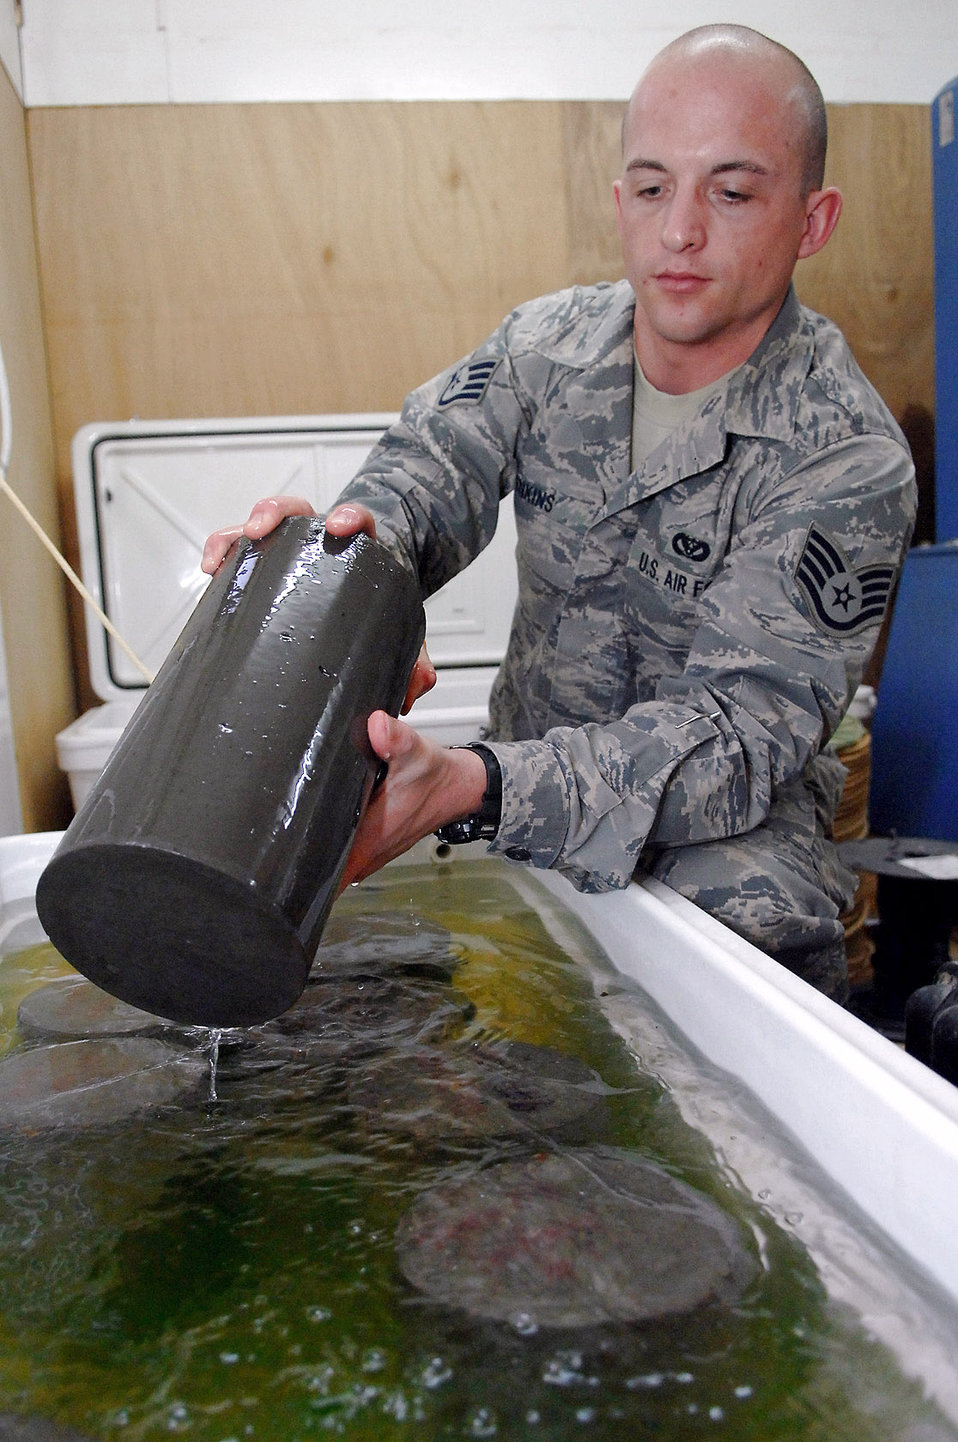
Under pressure

Staff Sgt. Jack Jenkins pulls out a concrete cylinder sample that was taken from the new Housing 6 area shoppette foundation Feb. 21 at Balad Air Base, Iraq. The concrete will be cured for seven days in a water bath before a strength test is performed on it, during which the cylinder must endure 4,500 pounds per square inch of compression. Sergeant Jenkins is a 332nd Civil Engineer Squadron engineering assistant deployed from Ellsworth Air Force Base, S.D.